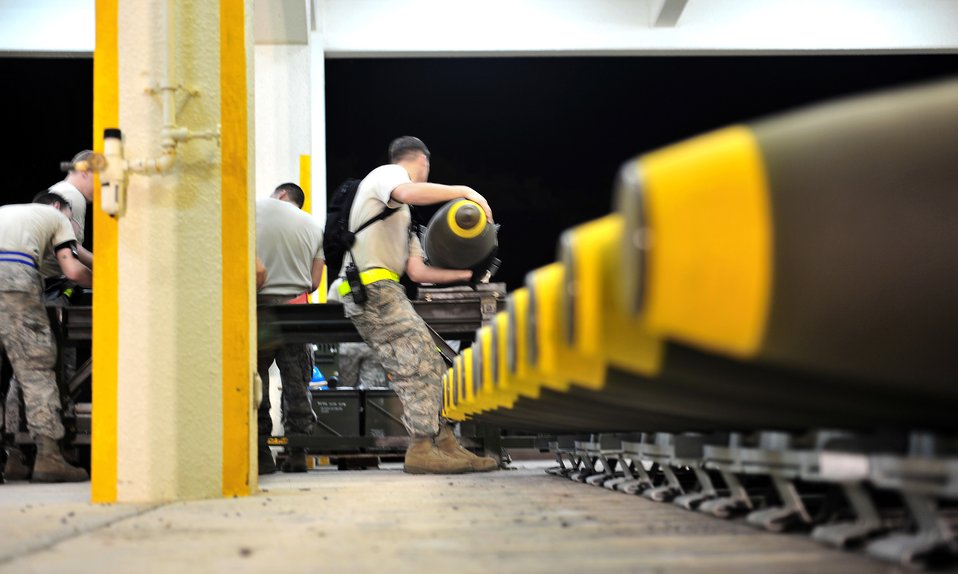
Filling the bomb rack

Airmen from the 18th Munitions Squadron build Mark 83 bomb bodies March 24, 2010, during a local operational readiness exercise at Kadena Air Base, Japan.